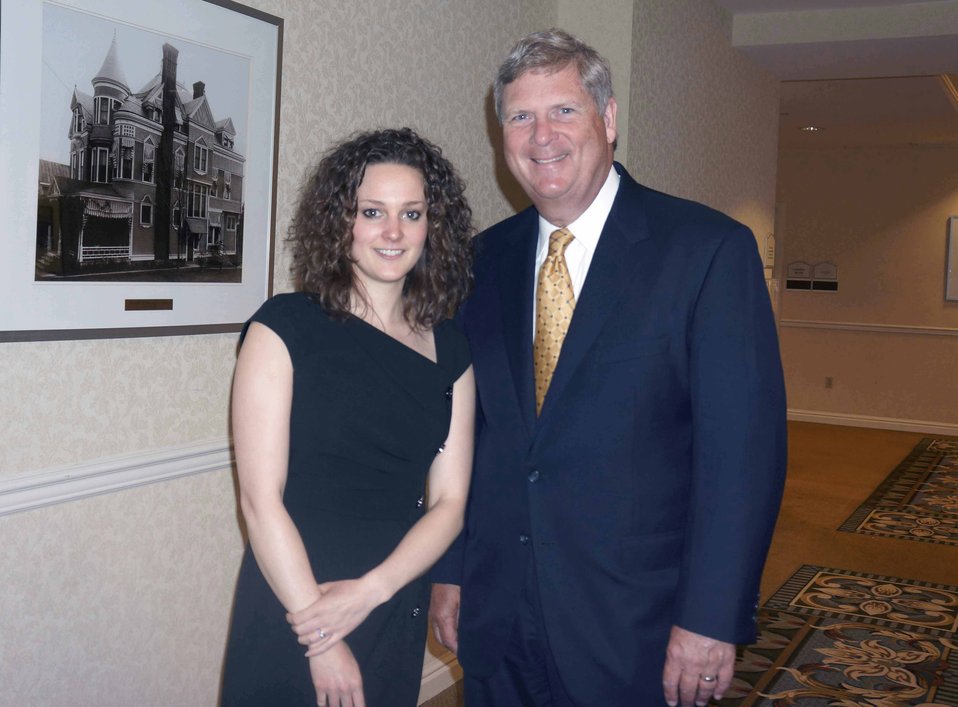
Agriculture Secretary Tom Vilsack stands beside Nuts About Granola Chief Executive Officer (CEO) Sarah Lanphier at the “Made in Rural America Regional Forum” held in Canonsburg, PA on Jun. 4, 2014. Lanphier started her granola manufacturing business in a kitchen incubator. Lanphier received funding through a U.S. Department of Agriculture (USDA) Rural Development (RD) Rural Business Enterprise Grant program (RBEG) and is now manufacturing in her own facility and has her own storefront.